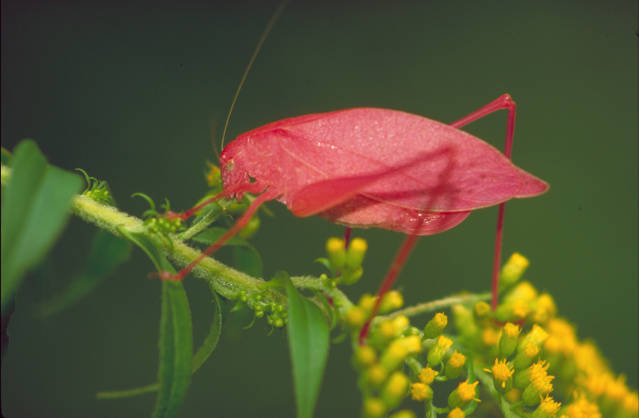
katydid on goldenrod